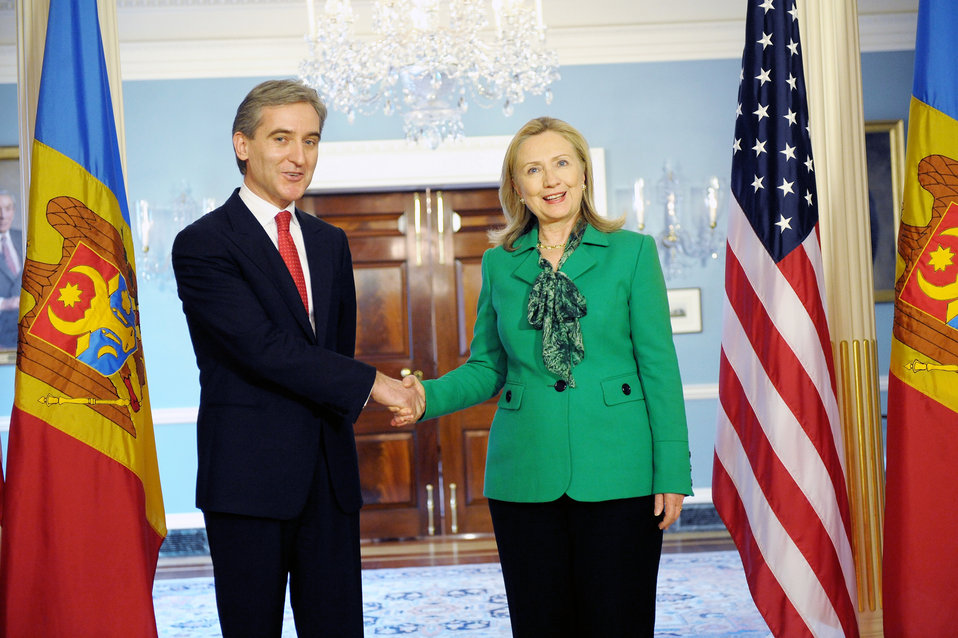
Secretary Clinton Meets With Moldova Deputy Prime Minister Leanca

U.S. Secretary of State Hillary Rodham Clinton meets with Deputy Prime Minister and Minister of Foreign Affairs and European Integration Iurie Leanca of the Republic of Moldova at the Department of State in Washington, D.C. on March 20, 2012.